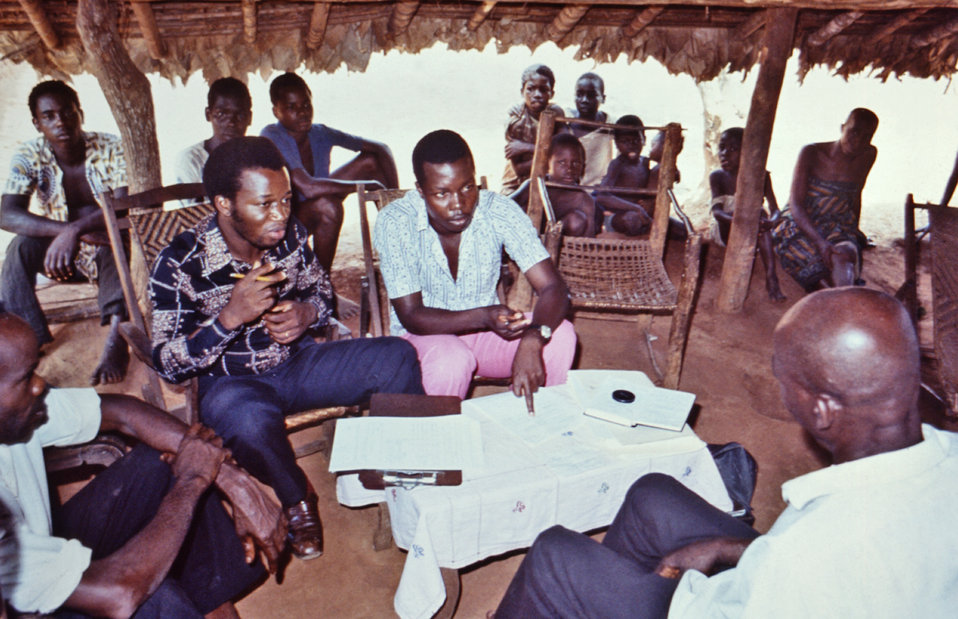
This photograph showed Zairian health officials discussing data that was collected during the country's Ebola outbreak of 1976.